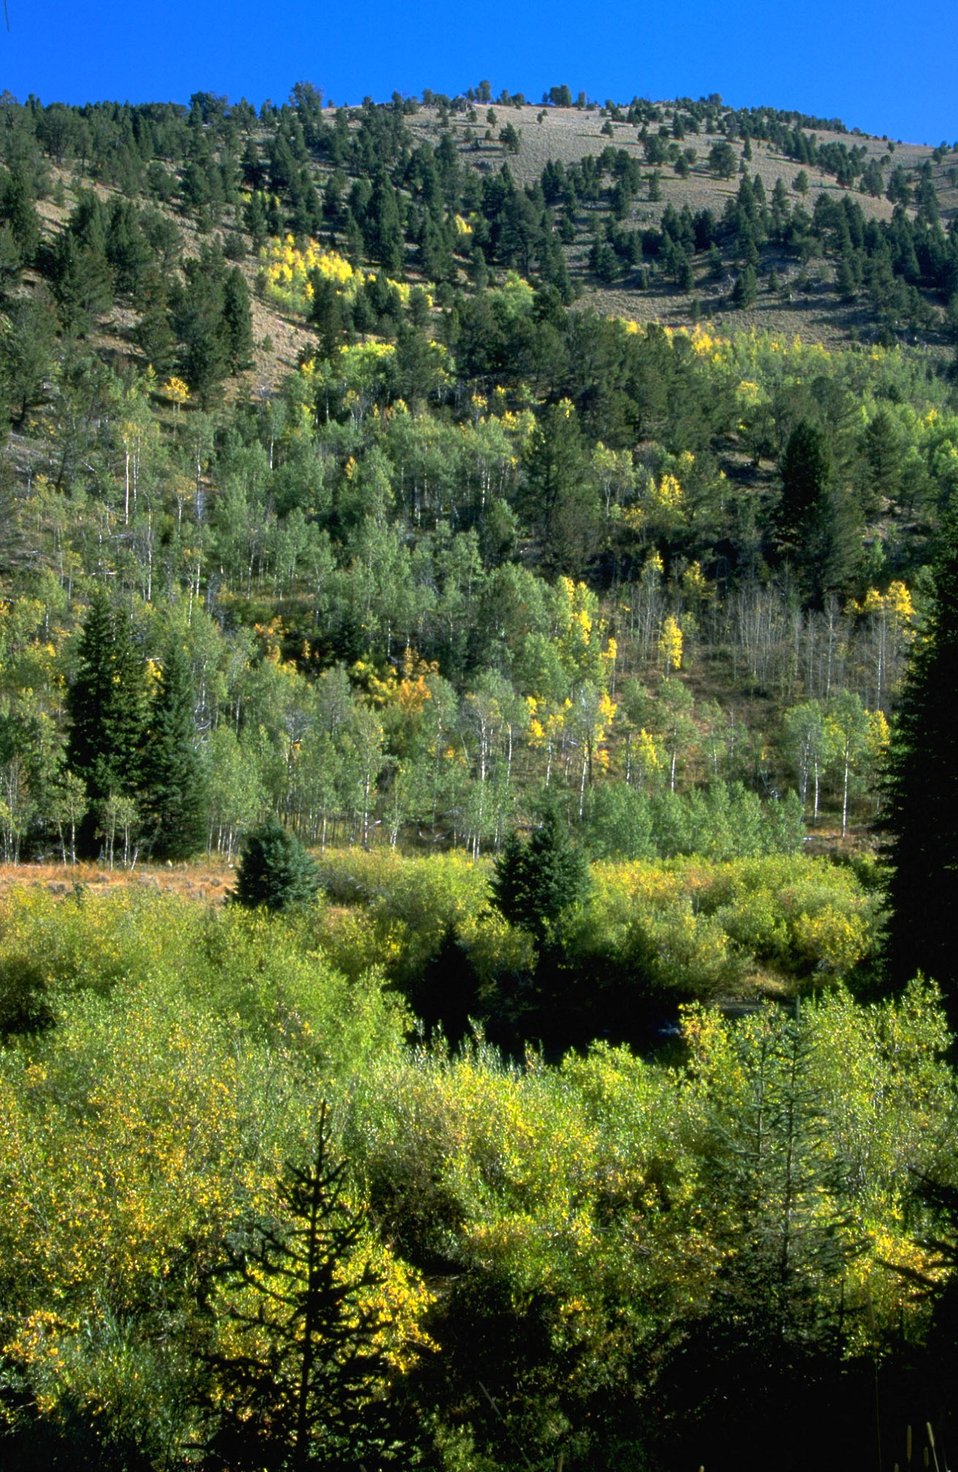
Mountain slopes with Willows and Aspen